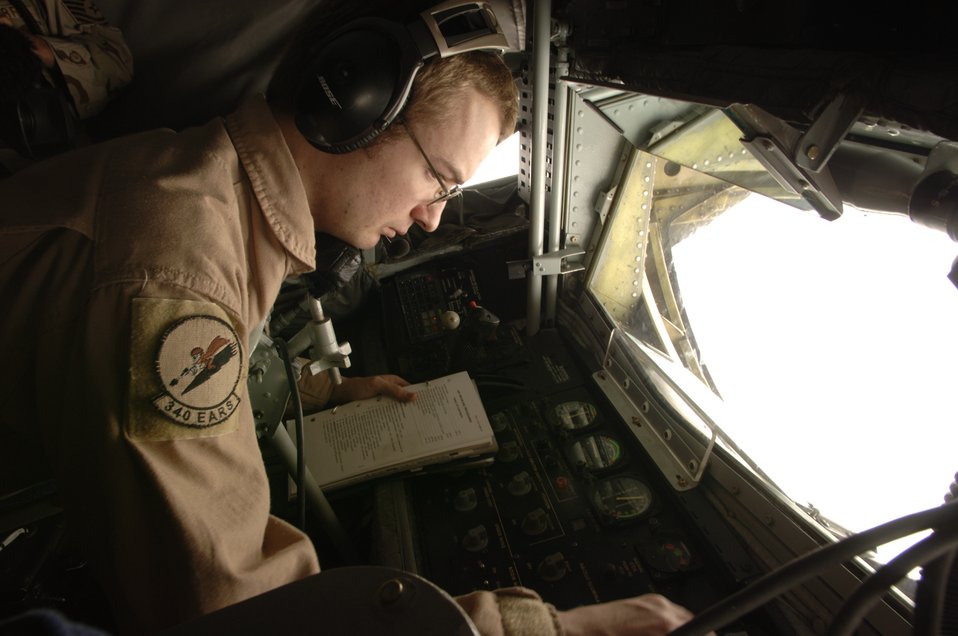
Boom uses steady hand to keep aircraft fighting

Senior Airman Jered Danielson watches as an aircraft approaches the KC-135R Stratotanker. As a boom operator, he helps extend the capability and range of all the aircraft he refuels. Airman Danielson is an in-flight refueling journeyman assigned to the 340th Expeditionary Air Refueling Squadron. He is deployed to Southwest Asia from the 911th Air Refueling Squadron at Grand Forks Air Force Base, N.D.